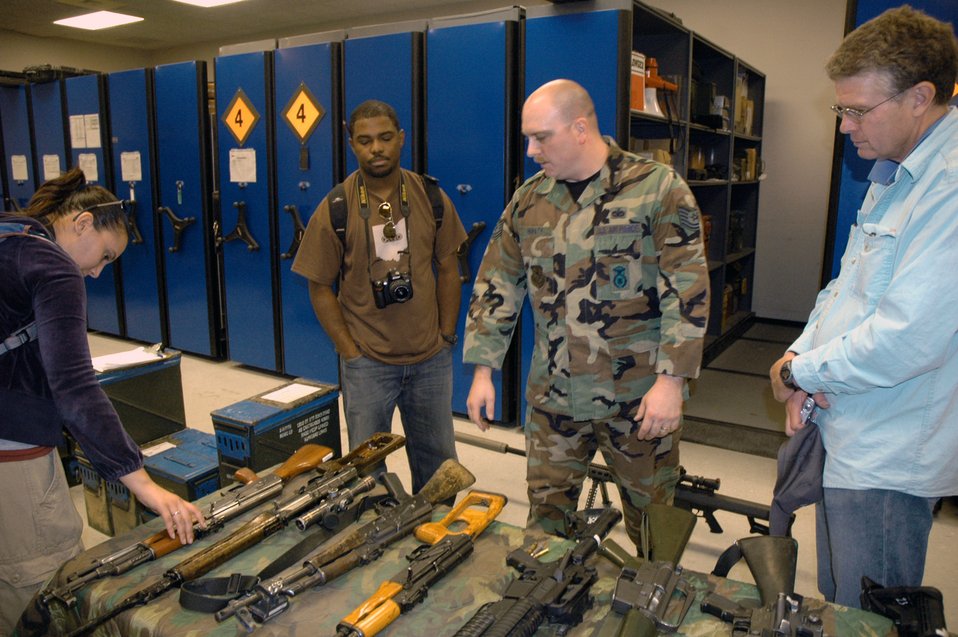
Air Force Art Program artists visit USAF EC

Tech. Sgt. Sean Heraty describes what's in the armory to Tatiana El-Khouri, Steven Wright and John Finger -- all artists participating in an official visit to the USAF EC as part of the Air Force Art Program. During a three-day visit, the artists saw the armory, the center campus and in-the-field training for Phoenix Warrior and Eagle Flag courses. Sergeant Heraty is assigned to the U.S. Air Force Expeditionary Center armory.